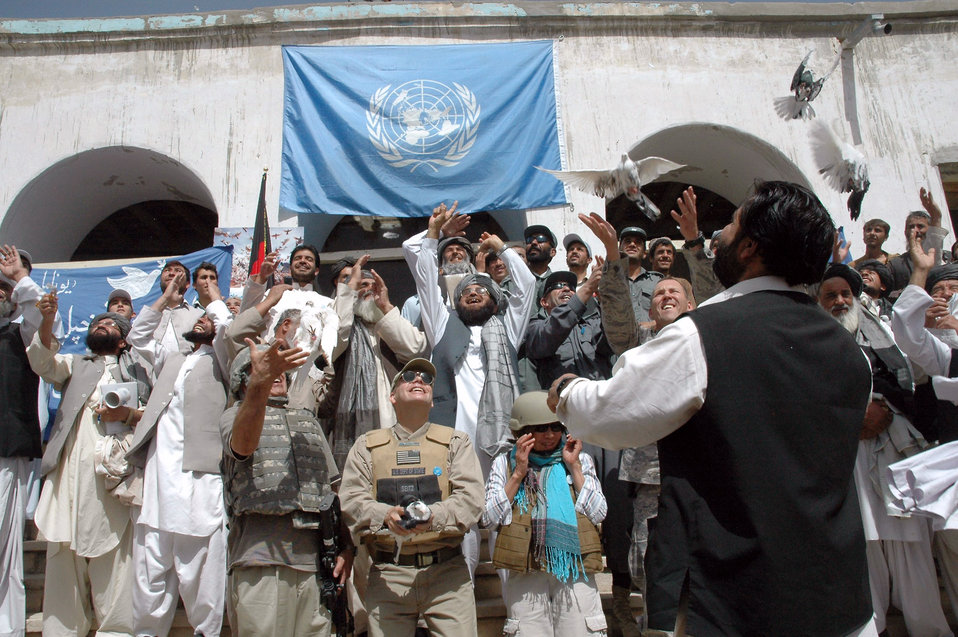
Zabul governor: Unite in peace for Afghanistan, for the world

Zabul Governor Delbar Jan Arman (center), provincial authorities and Zabul Provincial Reconstruction Team personnel release doves Sept. 21 in celebration of the United Nations Day of Peace in Qalat, Afghanistan. The governor spoke to nearly 200 people about bringing peace to Afghanistan to ensure peace around the world.